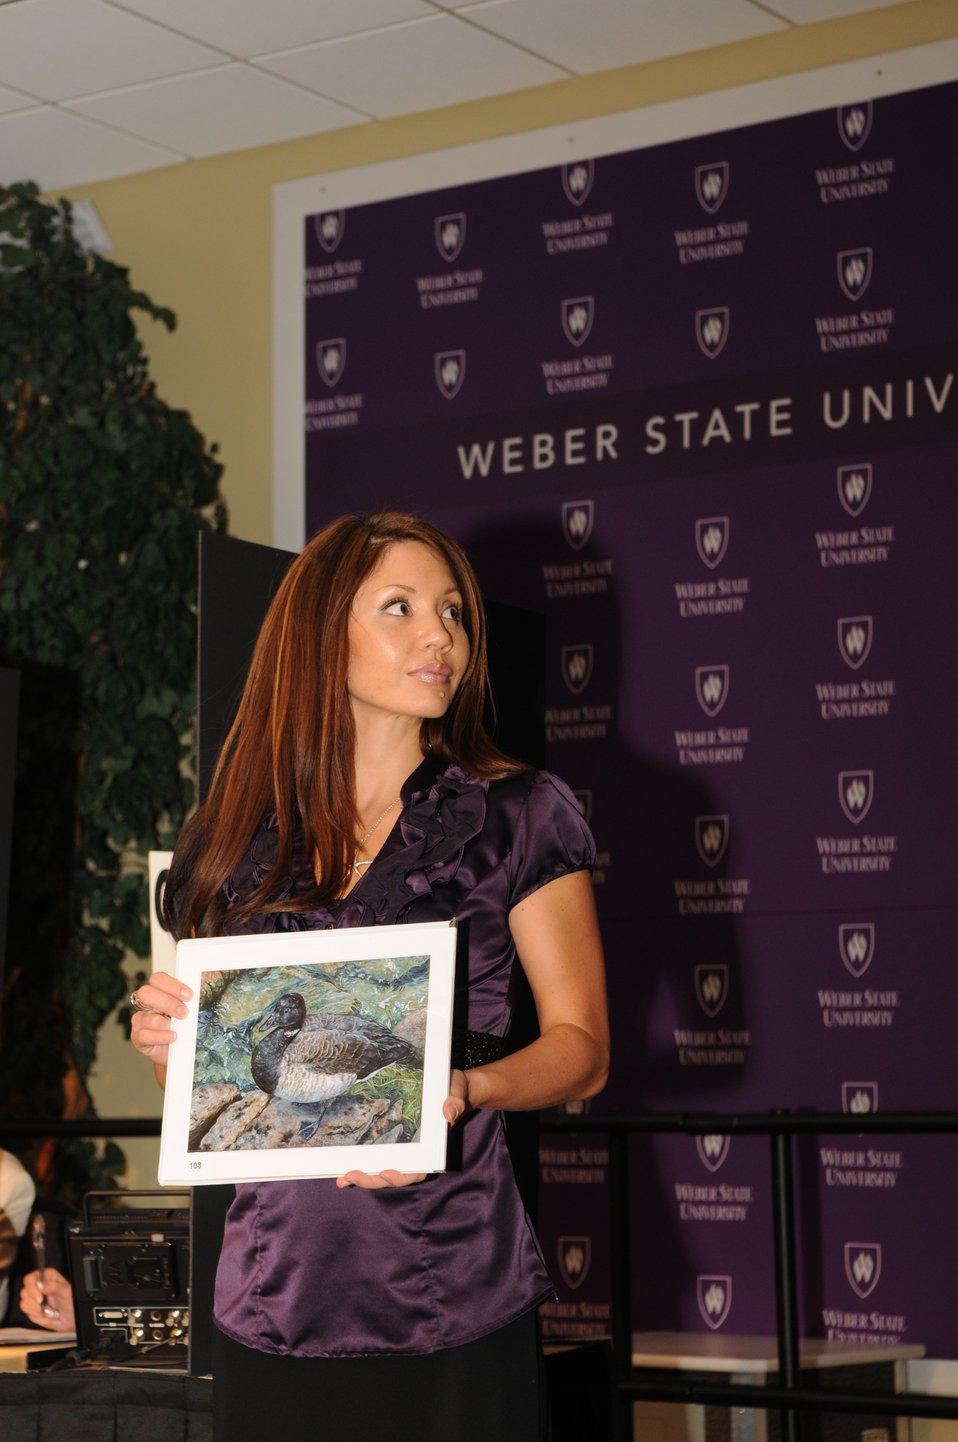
Artwork Presenter

The U.S. Fish & Wildlife Service sponsored the 2012 Federal Duck Stamp Art Contest September 28 and 29 in Ogden, Utah, at Weber State University. A panel of five judges was responsible for choosing the art work used to design the 2013-2014 Migratory Bird Hunting and Conservation Stamp.